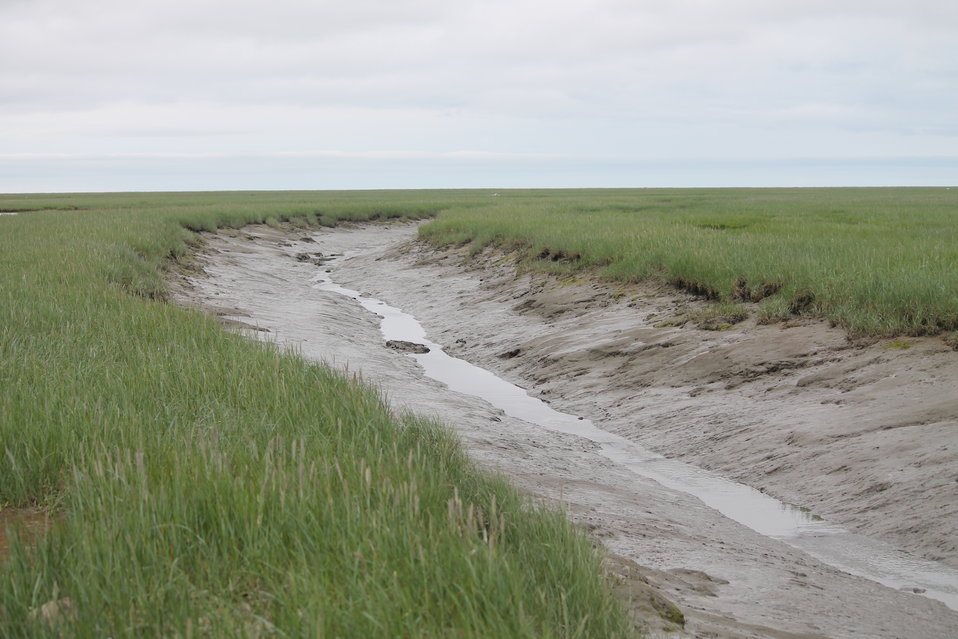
Tidal Slough

Along the coastal zone of Yukon Delta NWR there are many sloughs that are tidally influenced. This picture was taken during low tide. Sloughs are much easier to traverse at low tide. It is important for researchers to be aware of the tidal dynamics in their research area.

USFWS Yukon Delta NWR